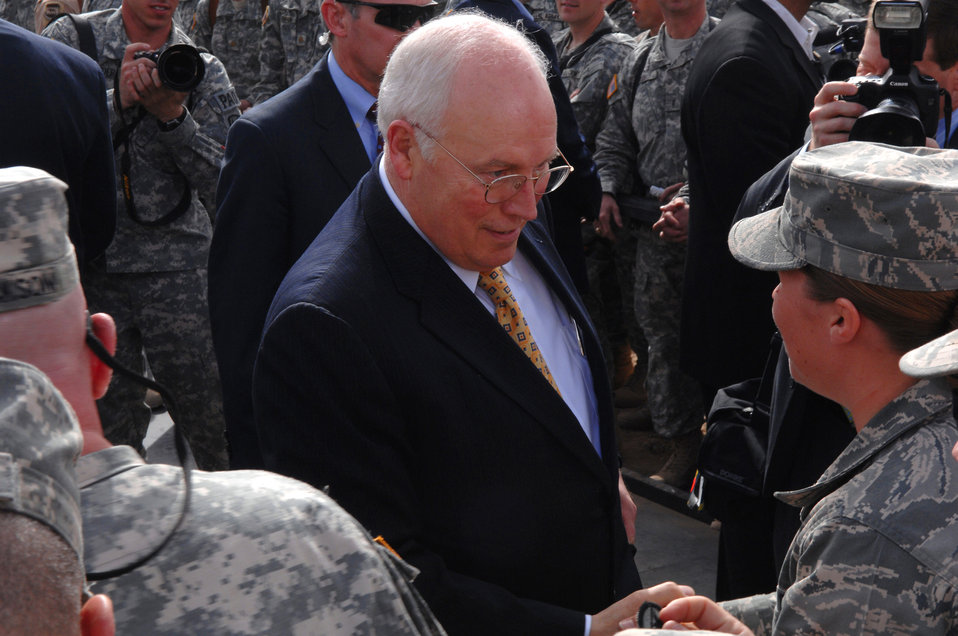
Vice president visits troops at Balad

Vice President Dick Cheney shakes hands with servicemembers after a speech March 18 at Balad Air Base, Iraq. The vice president came to the base to visit deployed military men and women serving in support of Operation Iraqi Freedom.